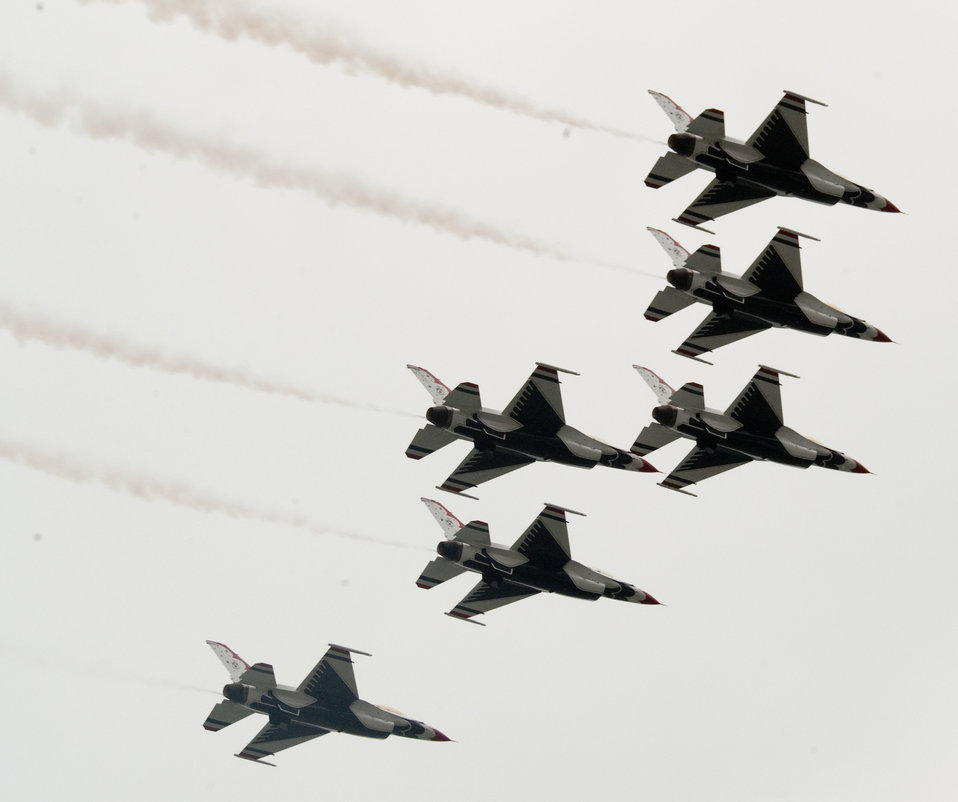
Air Force Week New York City Proclamation Ceremony

Flyover of the Air Force Domonstration Team, The Thunderbirds during the Air Force Week New York City proclamation ceremony at the USS Intrepid on Aug. 24, 2010. The event at the Intrepid Sea, Air & Space Museum was highlighted by a six-ship flyover by the USAF Thunderbirds. The Honorable Michael Donley, Secretary of the Air Force attended, along with General Raymond Johns, Commander of Air Mobility Command. The Police Commissioner of the City of New York, the Honorable Raymond Kelly, represented NYC. Mr. Greg Kelly of